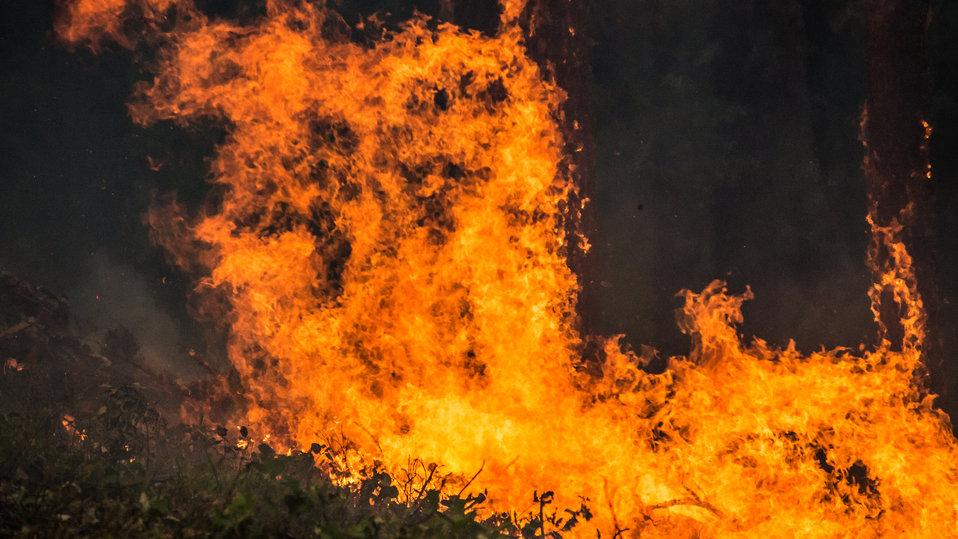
Geronimo Interagency Hotshot Crew, Department of the Interior (DOI) Indian Affairs (IA) Bureau of Indian Affairs (BIA) San Carlos Agency in Arizona; on assignment at the Big Windy Complex Wildlands Fire, approximately 15 miles west of Interstate-5 and East Northeast of Galice, Oregon, conducts a prescribed burn 'burnout' operation to help stop the main fire that may head toward this roadway, on Friday, Aug 9, 2013. The primary mission of the Interagency Hotshot Crews (IHC) is to provide a safe, organized, mobile and highly skilled hand crew for all phases of wildland fire suppression. The arduous duties and specialized assignments required of IHC personnel require uniform staffing, certification, training, equipment, communications, transportation, organization, and qualifications that adhere to interagency standards and guidelines.